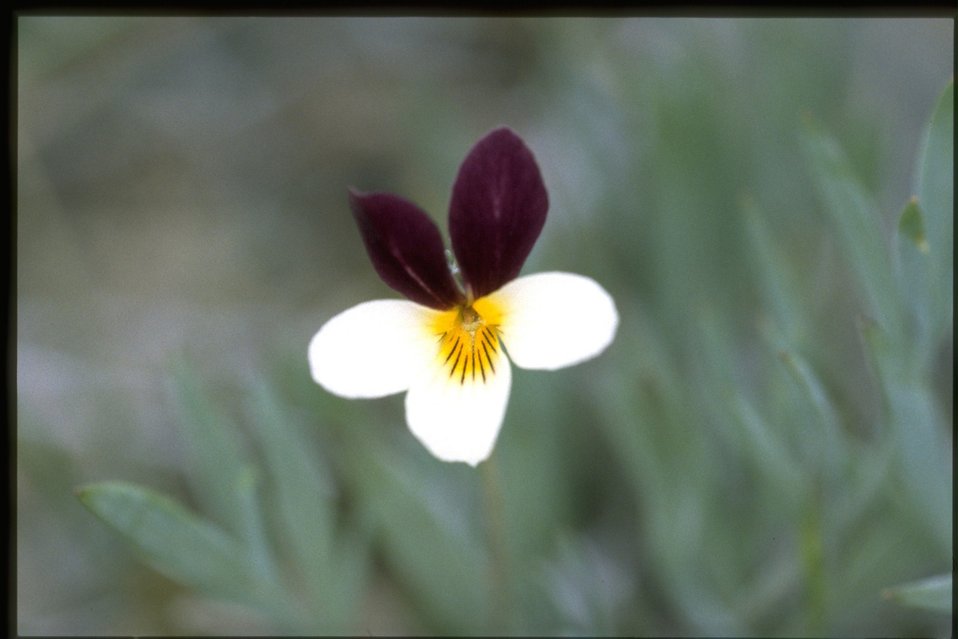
Medium shot of Viola hallii.